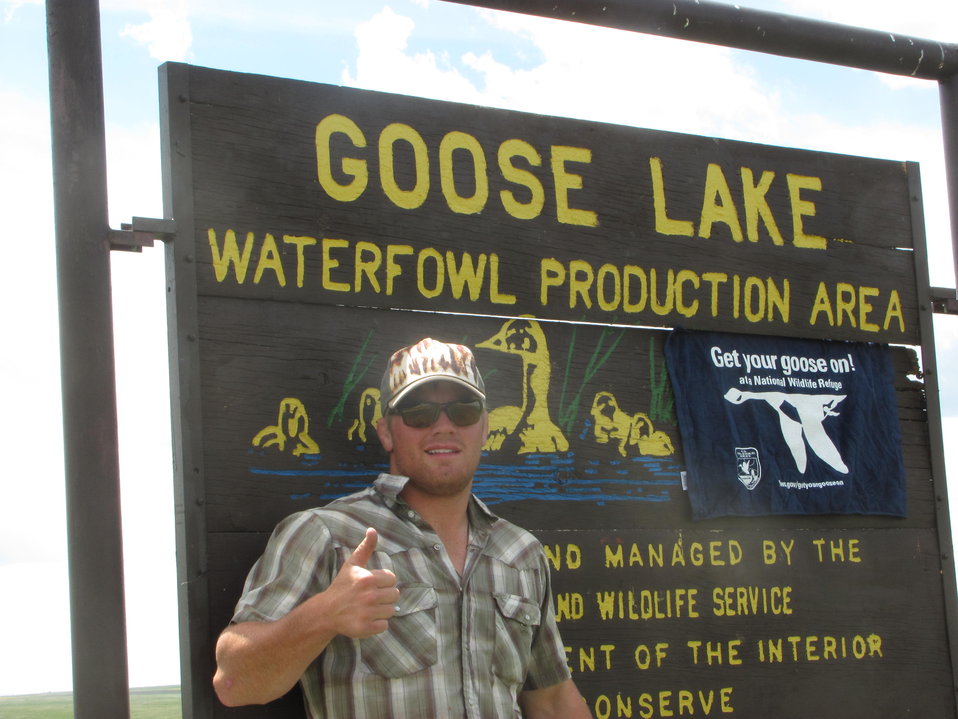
Get Your Goose On!

The Benton Lake National Wildlife Refuge traveling strike team Gets Their Goose On! at Medicine Lake.